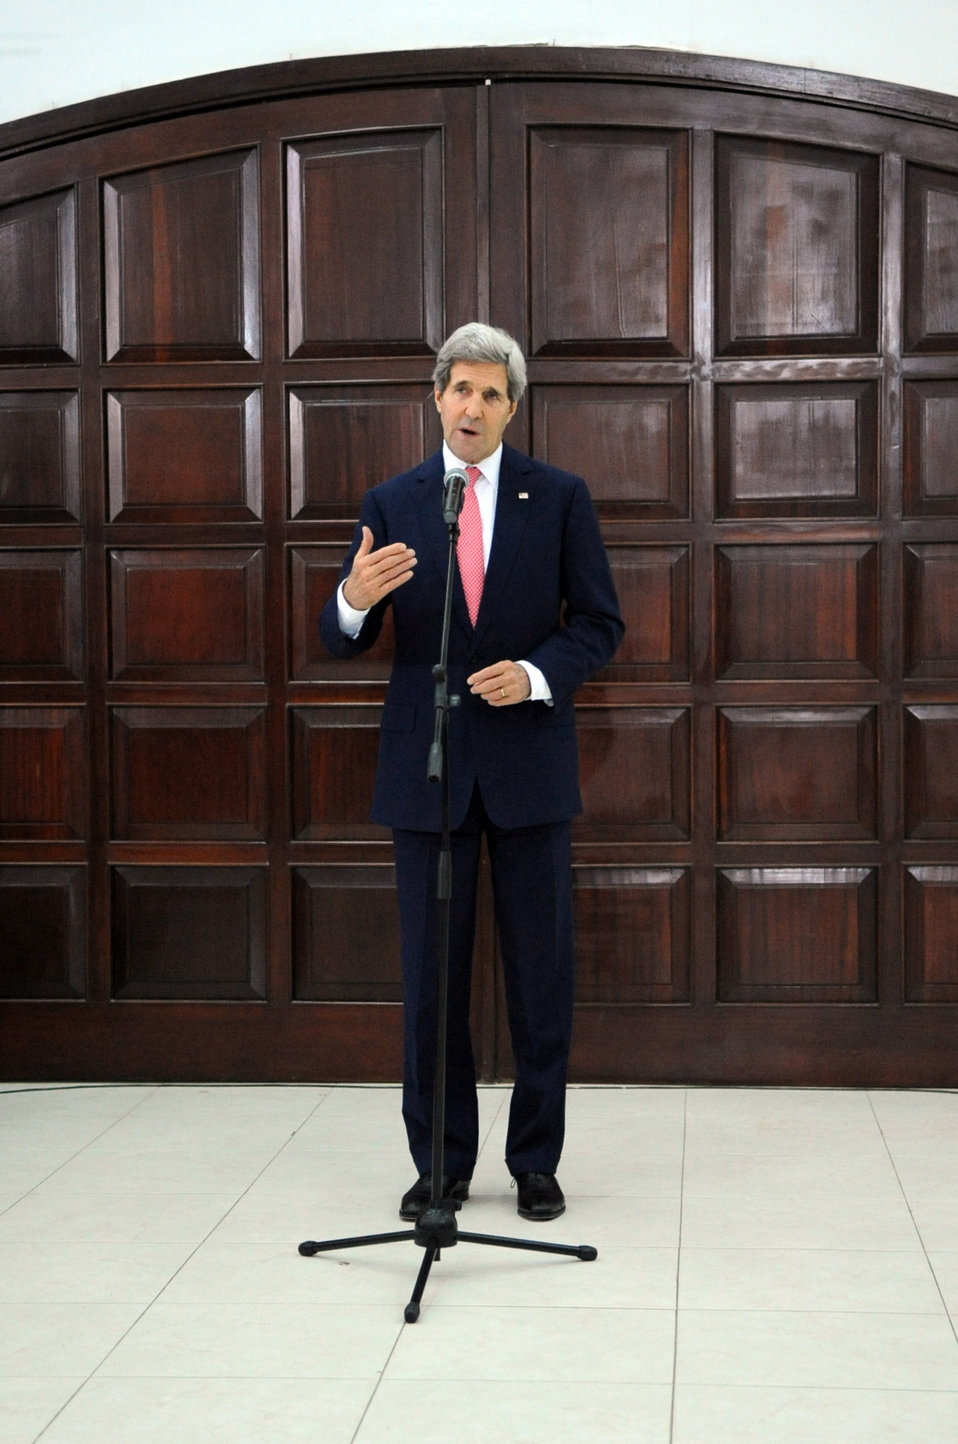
Secretary Kerry Addresses Reporters After Meeting With Palestinian President Abbas

U.S. Secretary of State John Kerry addresses reporters gathered at Palestinian Authority headquarters after a meeting with President Mahmoud Abbas in Ramallah on December 5, 2013.